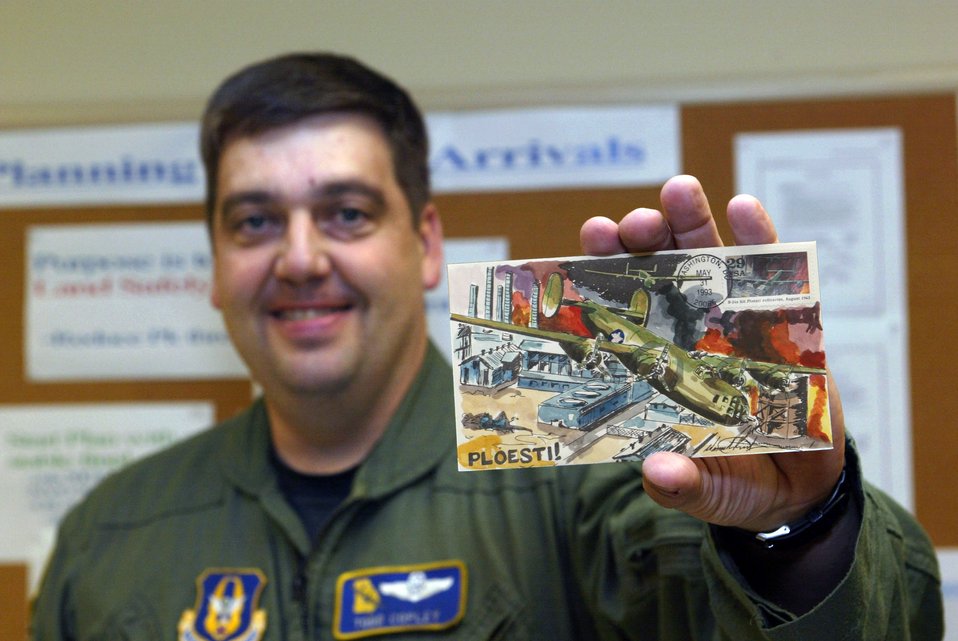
Pilot combines love of stamps, aviation to celebrate Air Force Anniversary

Maj. Todd Copley displays an example from his extensive stamp collection. The artwork depicts the B-24 Liberator bombing mission of the Ploesti Refineries, Ploesti, Romania in August of 1943. Major Copley is with the 700th Airlift Squadron, Dobbins Air Reserve Base, GA.